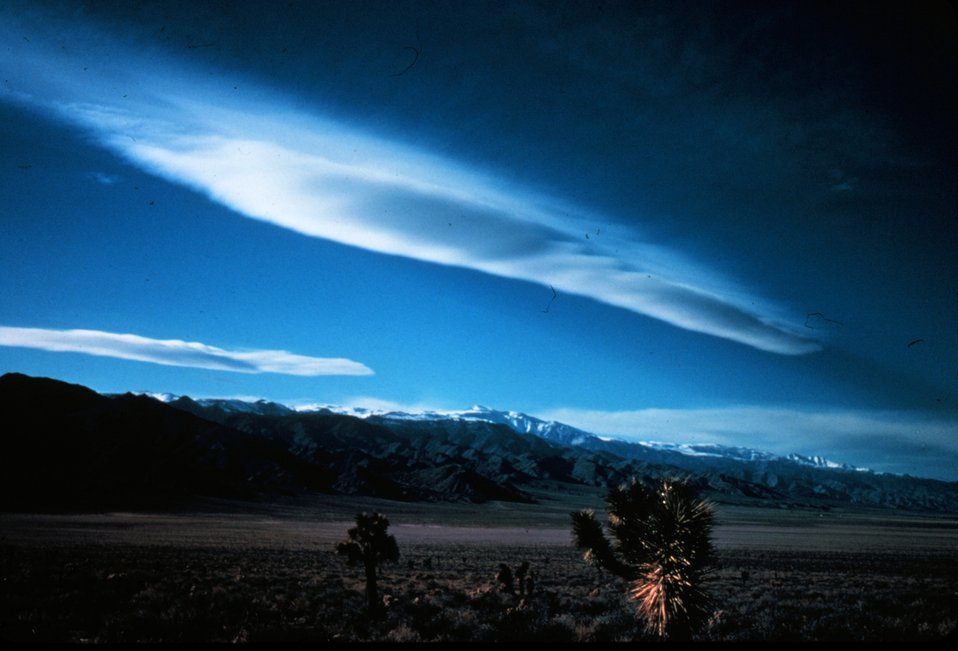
Lenticular cloud over the Inyo Mountains.